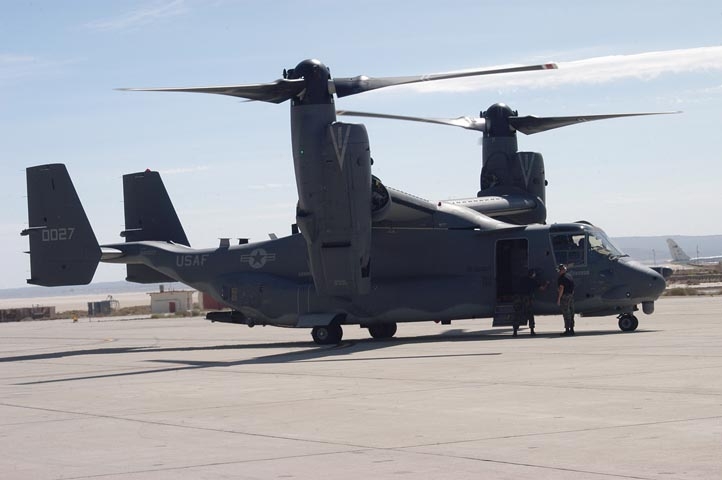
CV-22 testing accelerates in August

The CV-22 Osprey pulls in at Edwards Air Force Base, Calif., on Aug. 18 after performing a series of test flights. The tests evaluated the cumulative effects of several installed electronic countermeasures systems that demonstrated the susceptibility of the CV-22 in a simulated-threat environment.